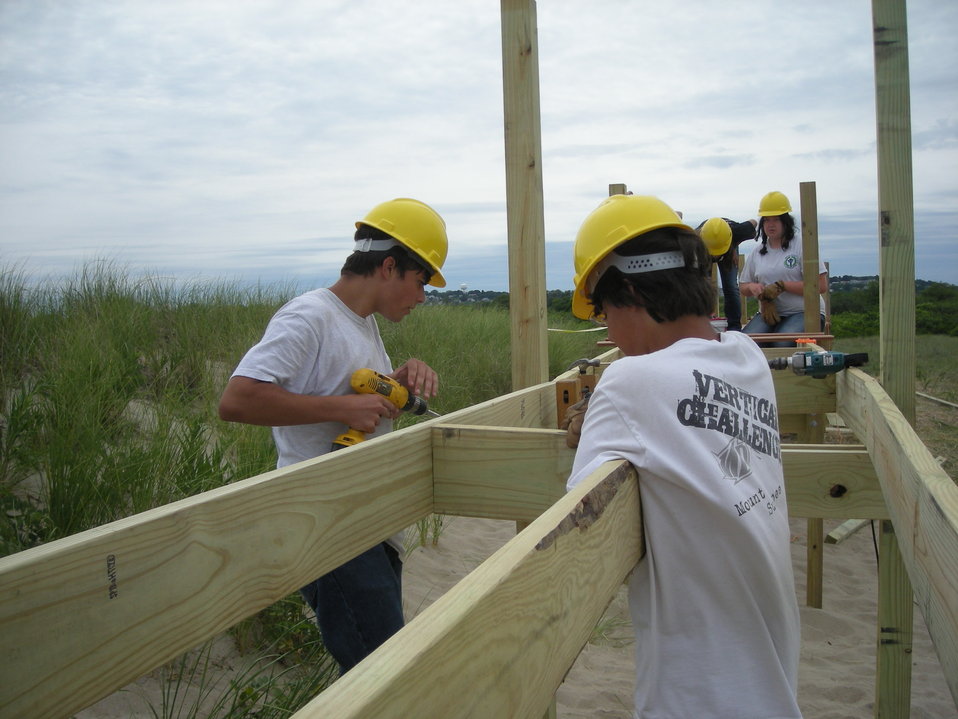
YCC construction at Parker River National Wildlife Refuge.